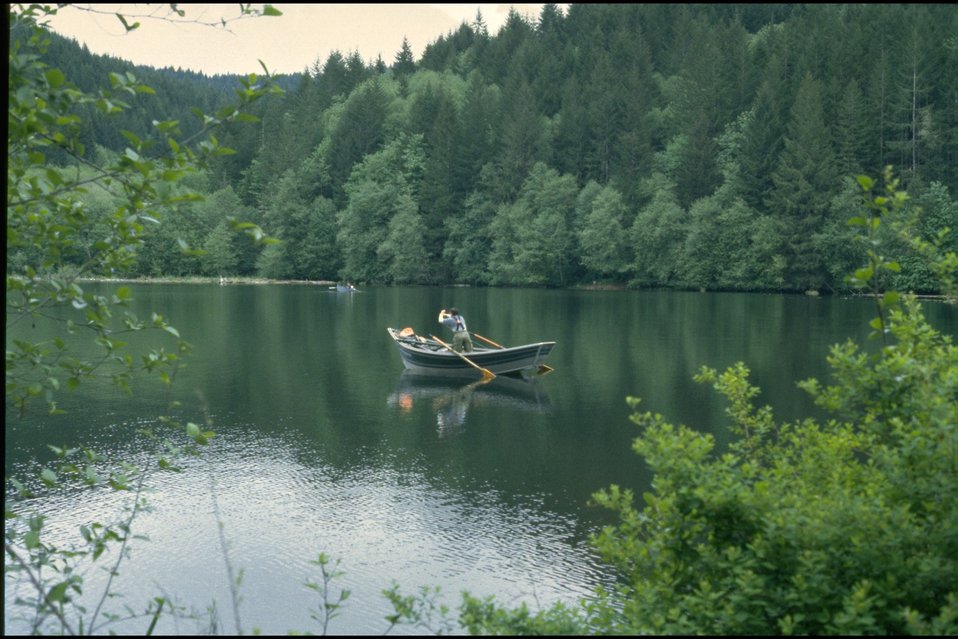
Man rowing on the Hult Reservoir.